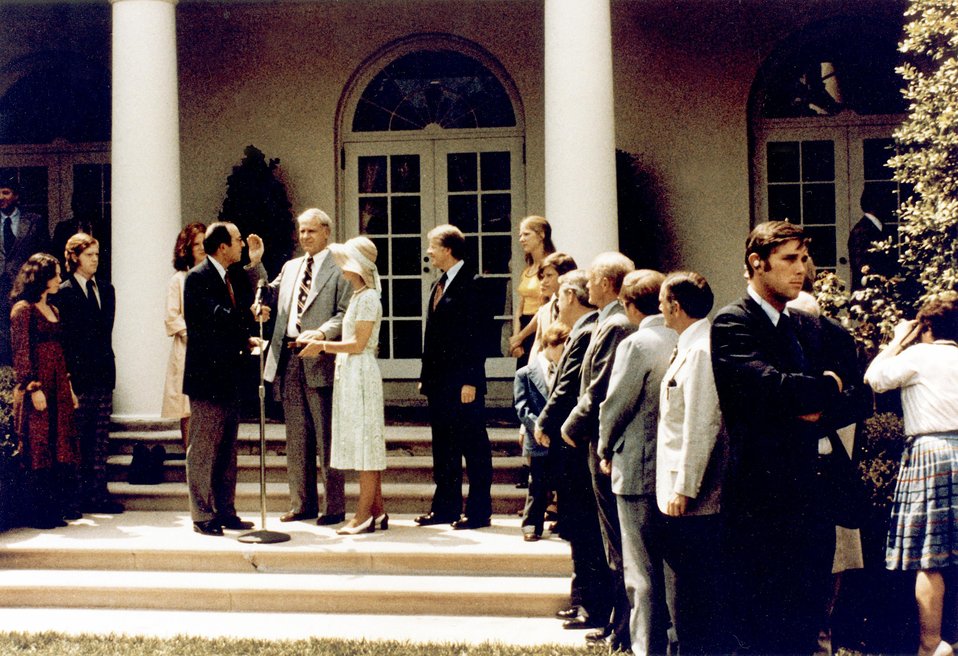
Swearing in James Schlesinger with President James Earl Carter.